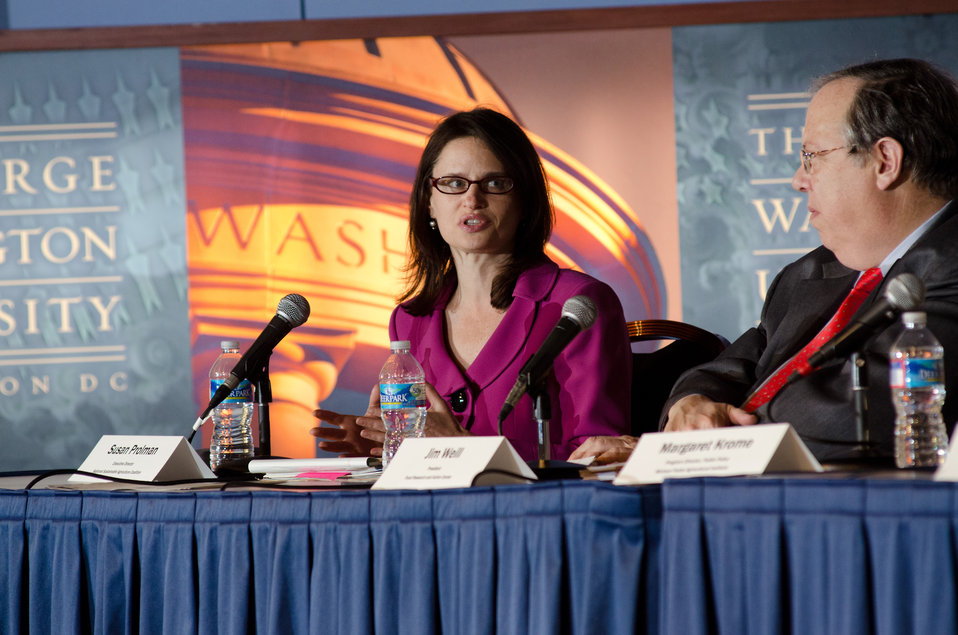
National Sustainable Agriculture Coalition Executive Director Susan Prolman, responds to a question during the “Shaping the Farm Bill for a Sustainable Future” Forum in the Jack Morton Auditorium, at the Trachtenberg School of Public Policy and Public Administration, on the George Washington University campus in Washington, D.C., on Thursday, March 1, 2012.